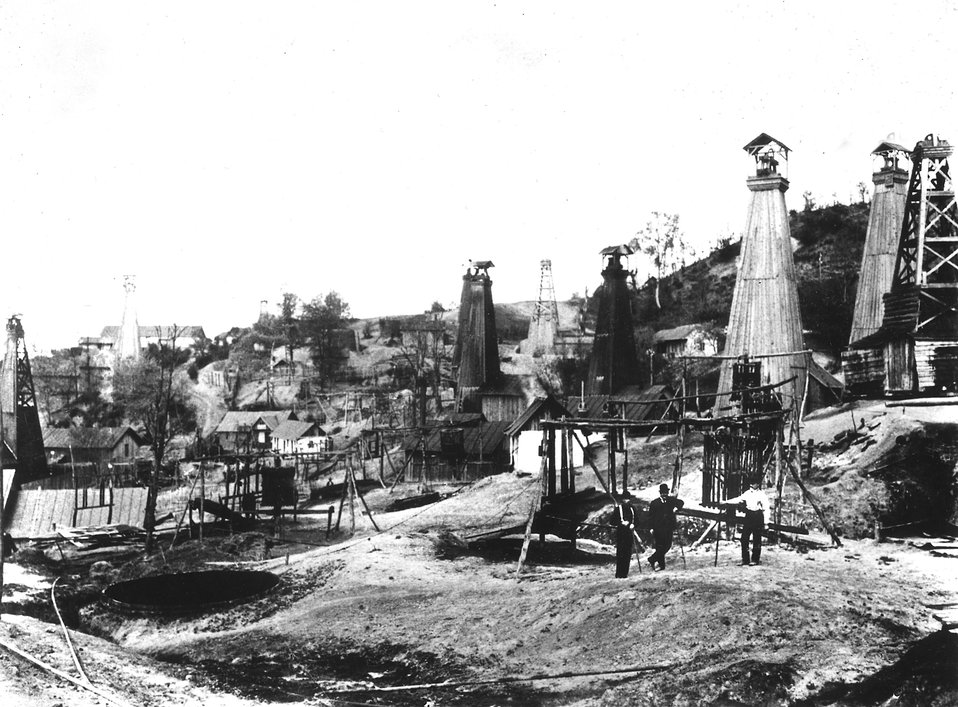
Early oil field. c. undated